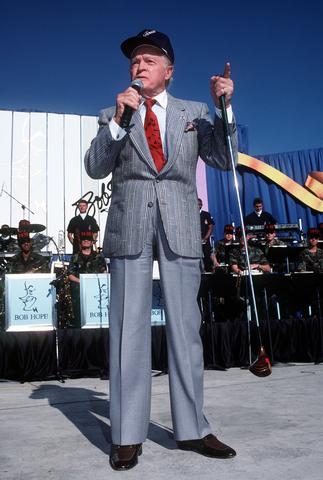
Thanks for the memories

LACKLAND AIR FORCE BASE, Texas -- Airmen around the world mourn the loss of Bob Hope, the only American ever to be made an honorary Veteran of America's Armed Forces. He was 100. In this photo, Hope entertains the troops with a 10-minute monologue in 1990 after a ceremony to rename the Thunderbird Theater here as the Bob Hope Performing Arts Center. The ceremony honored Hope's 50 years of entertaining American armed forces around the world. Hope called the troops his